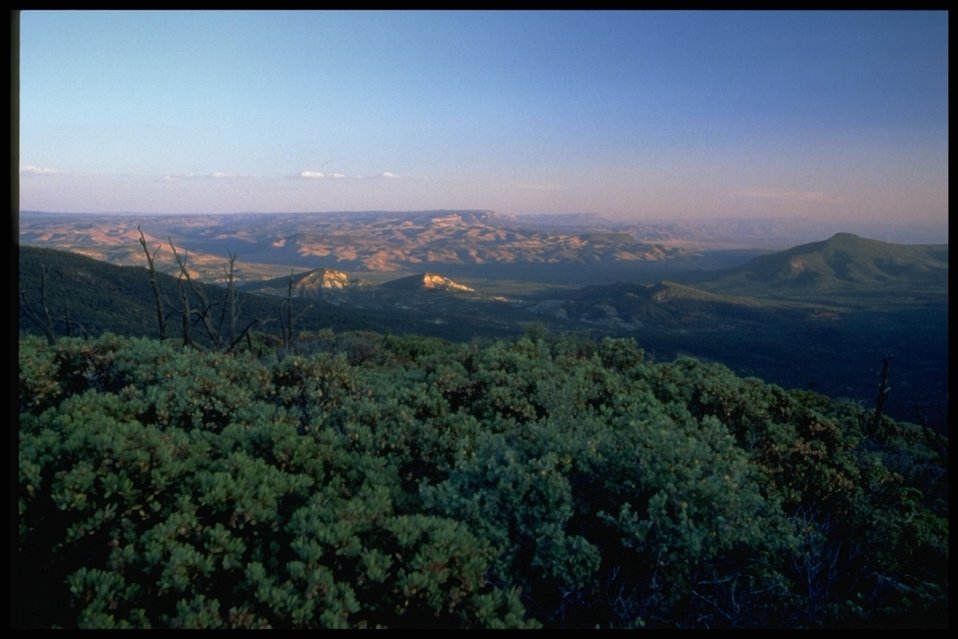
The Grand Canyon-Parashant National Monument contains over a million acres of majetsic lansdcape.